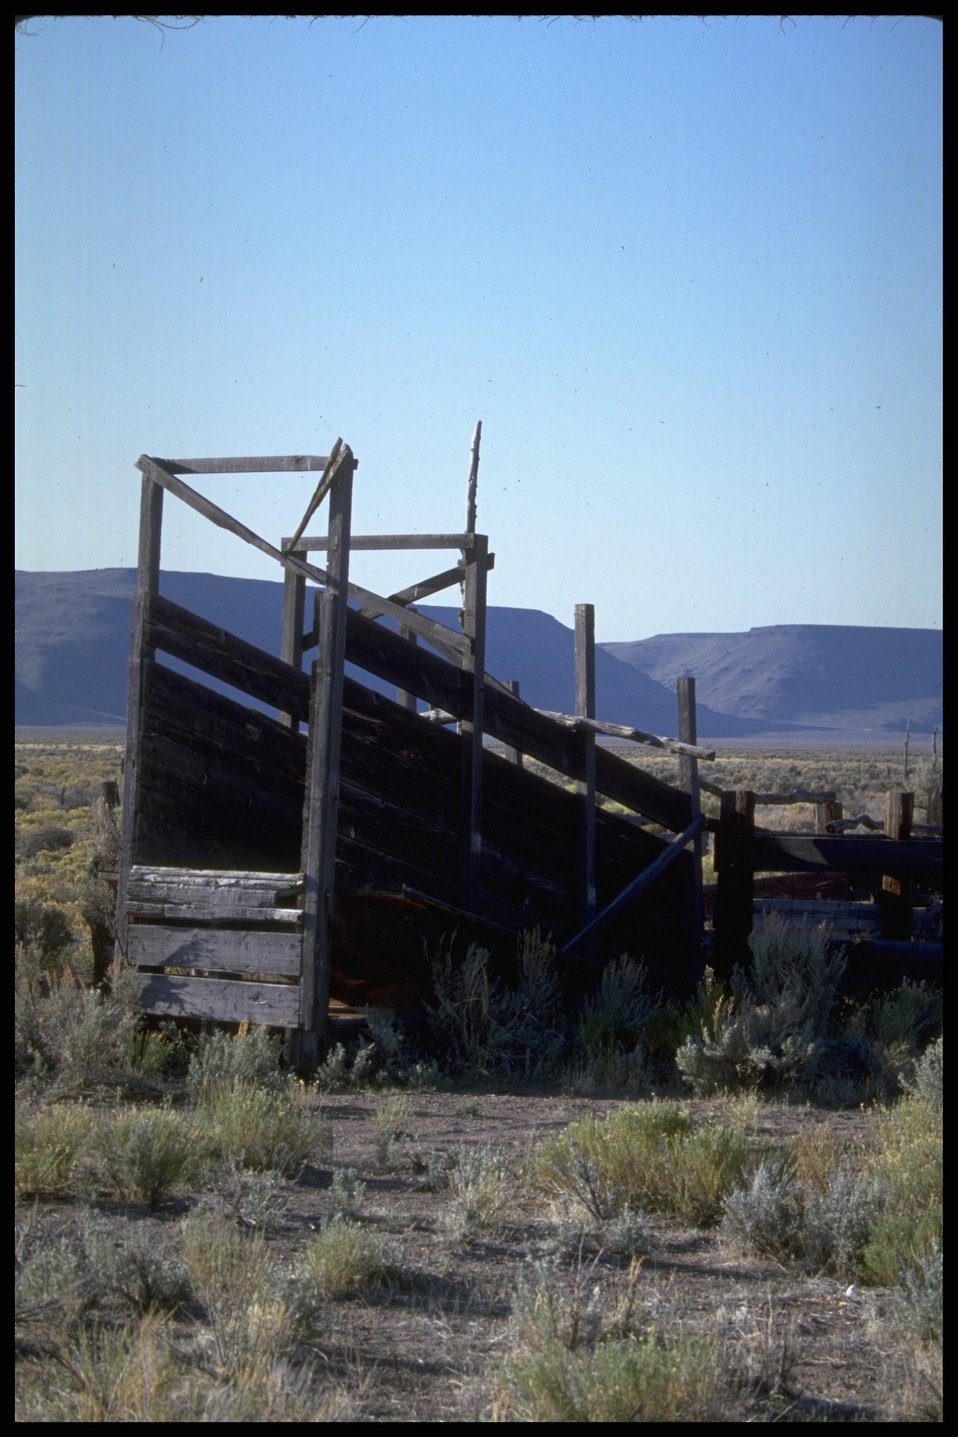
Loading chute, Lakeview District.